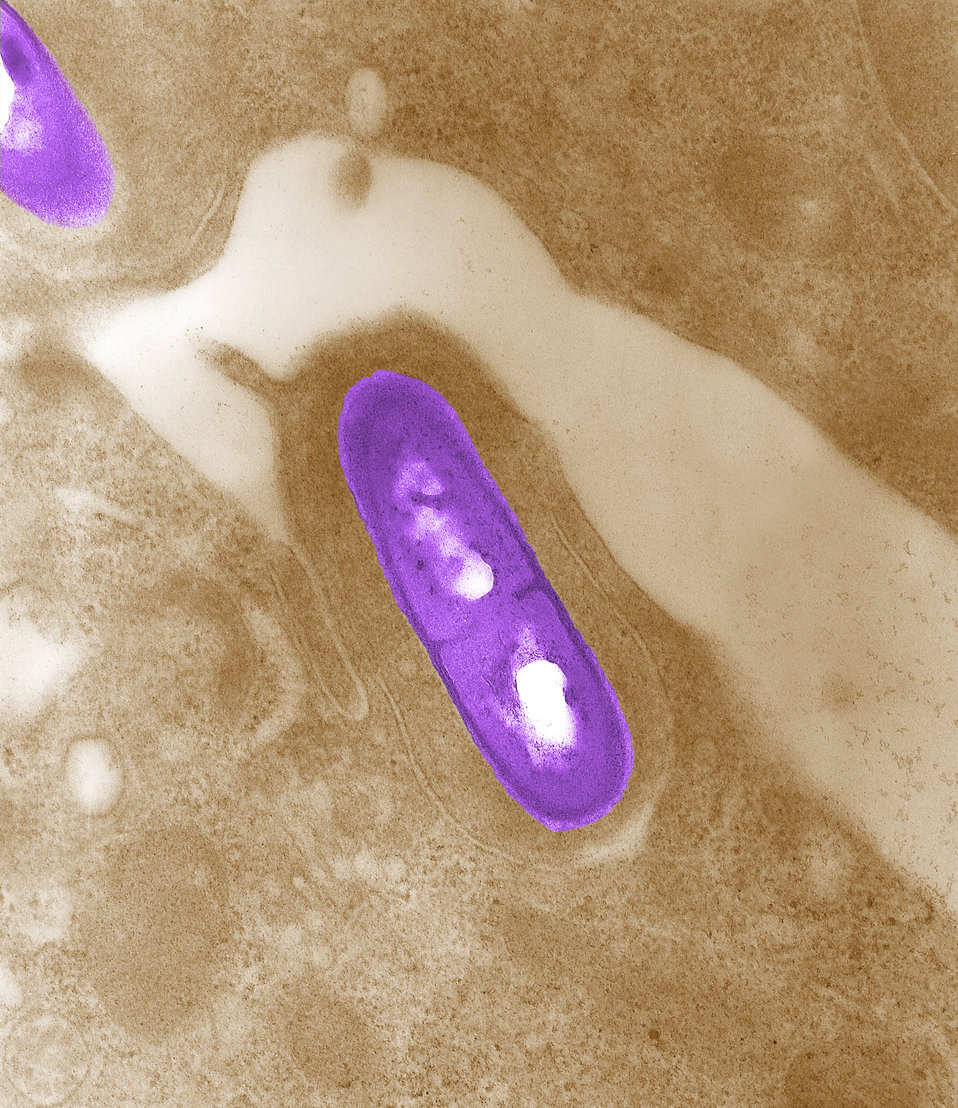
Electron micrograph of a Listeria bacterium in tissue. See PHIL 2286 for a black and white version of this image.